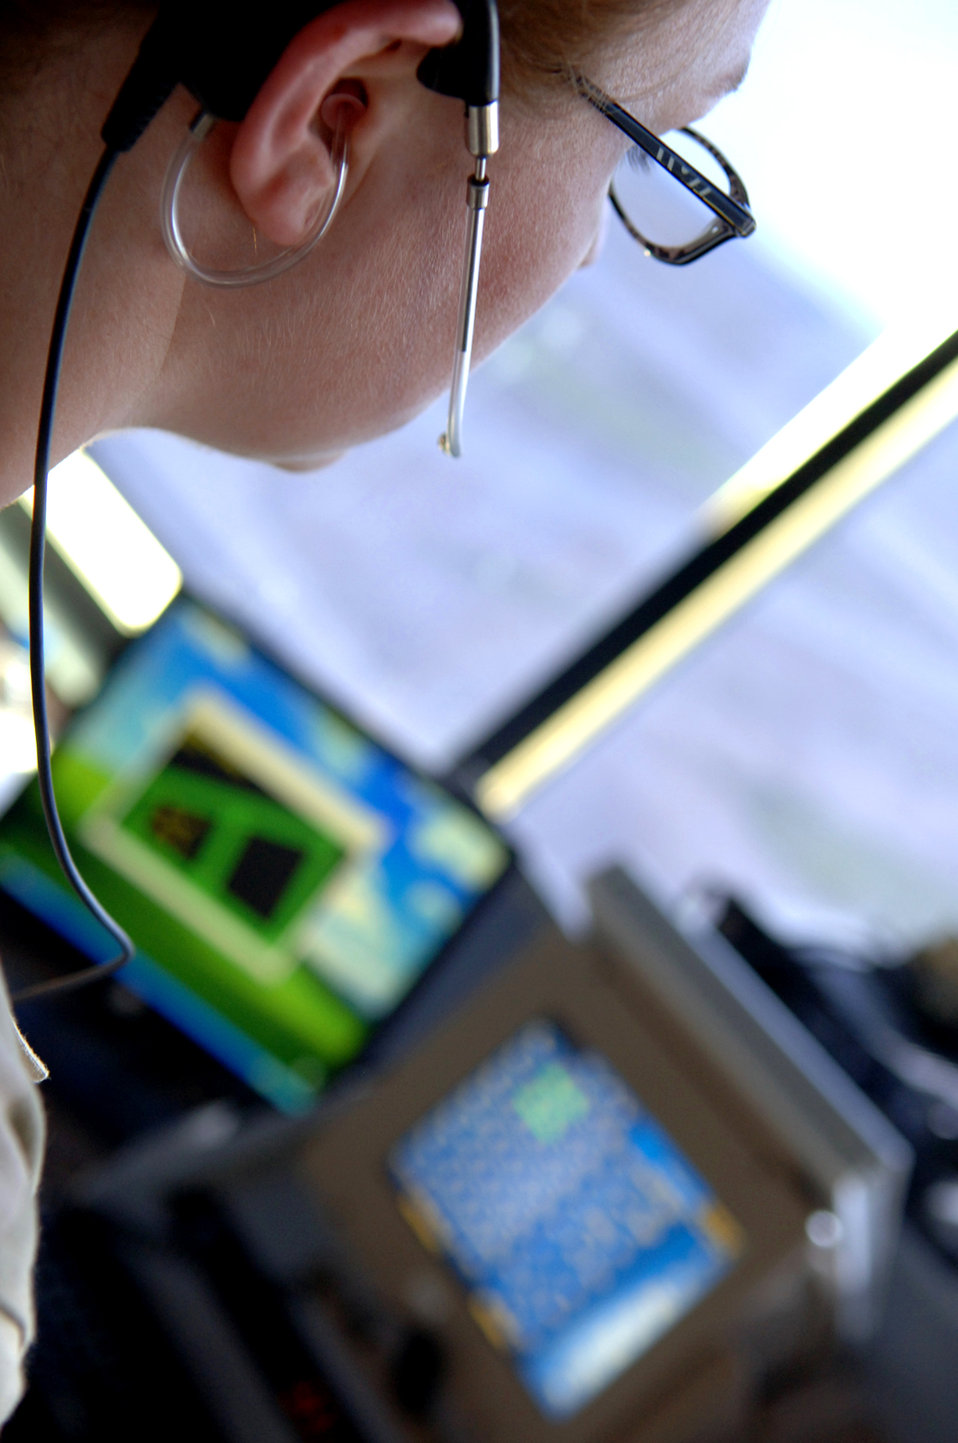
Operation Iraqi Freedom

BALAD AIR BASE, Iraq - Senior Airman Sara Mader, 332nd Expeditionary Operational Support Squadron, Air Traffic Controller comunicates with aircraft to ensure safe landings and takeoffs from the Balad tower Mar. 10, 2007.